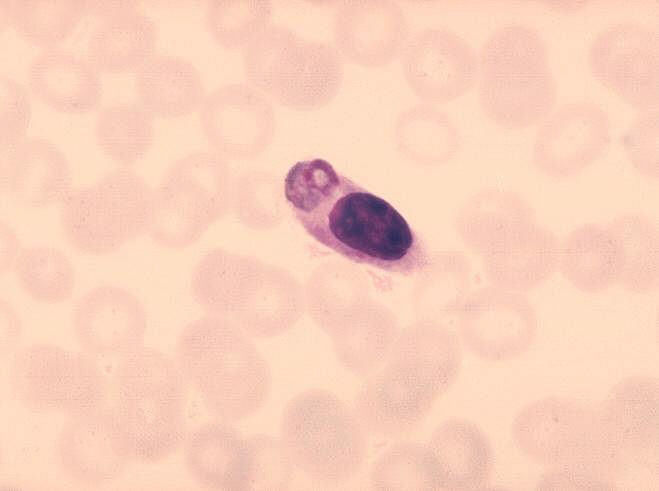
Monocyte with ingested malaria parasite.